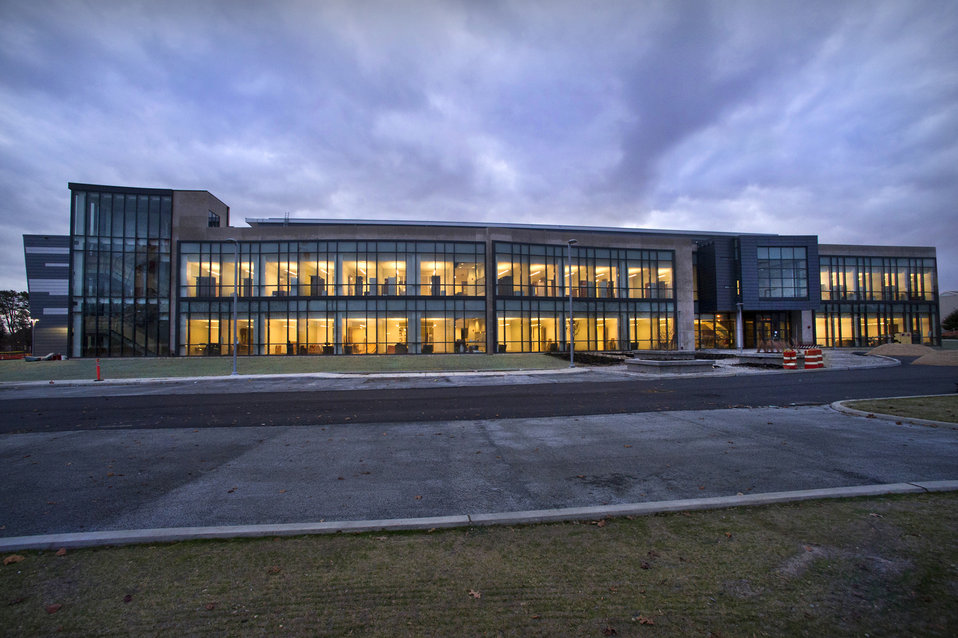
Shown is the Interdisciplinary Science Building at Brookhaven National Laboratory.

This two-story state-of-the-art building at Brookhaven National Laboratory will be a new, energy efficient and environmentally sustainable laboratory building that will provide modern, 21st-century, high-accuracy laboratories, offices and support functions. The building will group existing energy research scientists into one facility with collaborative environments to facilitate and realize the scientific benefits of multi-disciplinary collaboration. Work in the Interdisciplinary Science Building will focus on energy-related R&D enabling breakthroughs in the effective uses of renewable energy through improved conversion, transmission and storage.